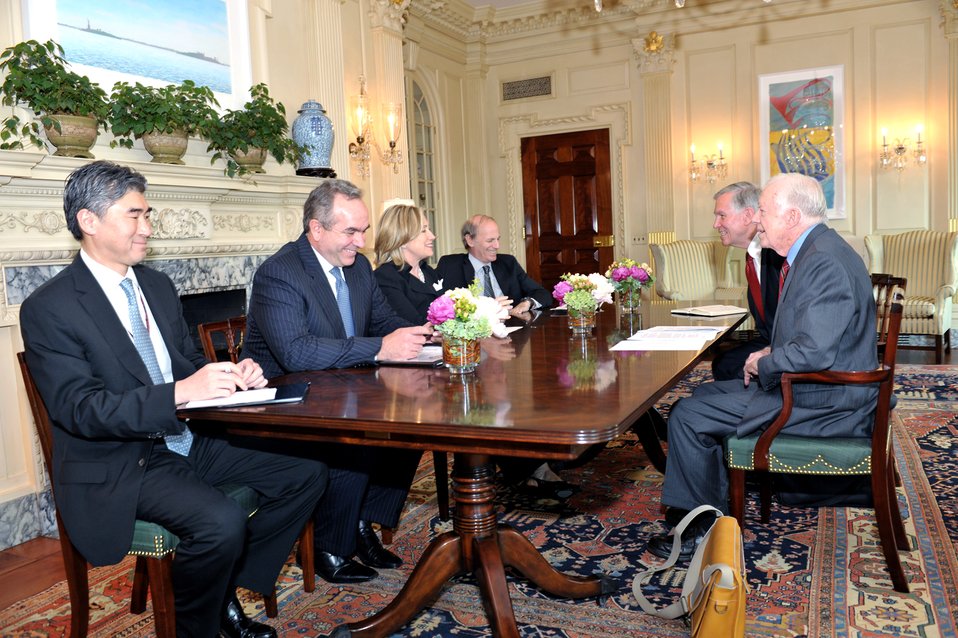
Secretary Clinton Meets With President Carter and Dr. Hardman

U.S. Secretary of State Hillary Rodham Clinton meets with President Jimmy Carter and Dr. John Hardman, CEO of the Carter Center, at the U.S. Department of State in Washington, D.C., on August 31, 2010.